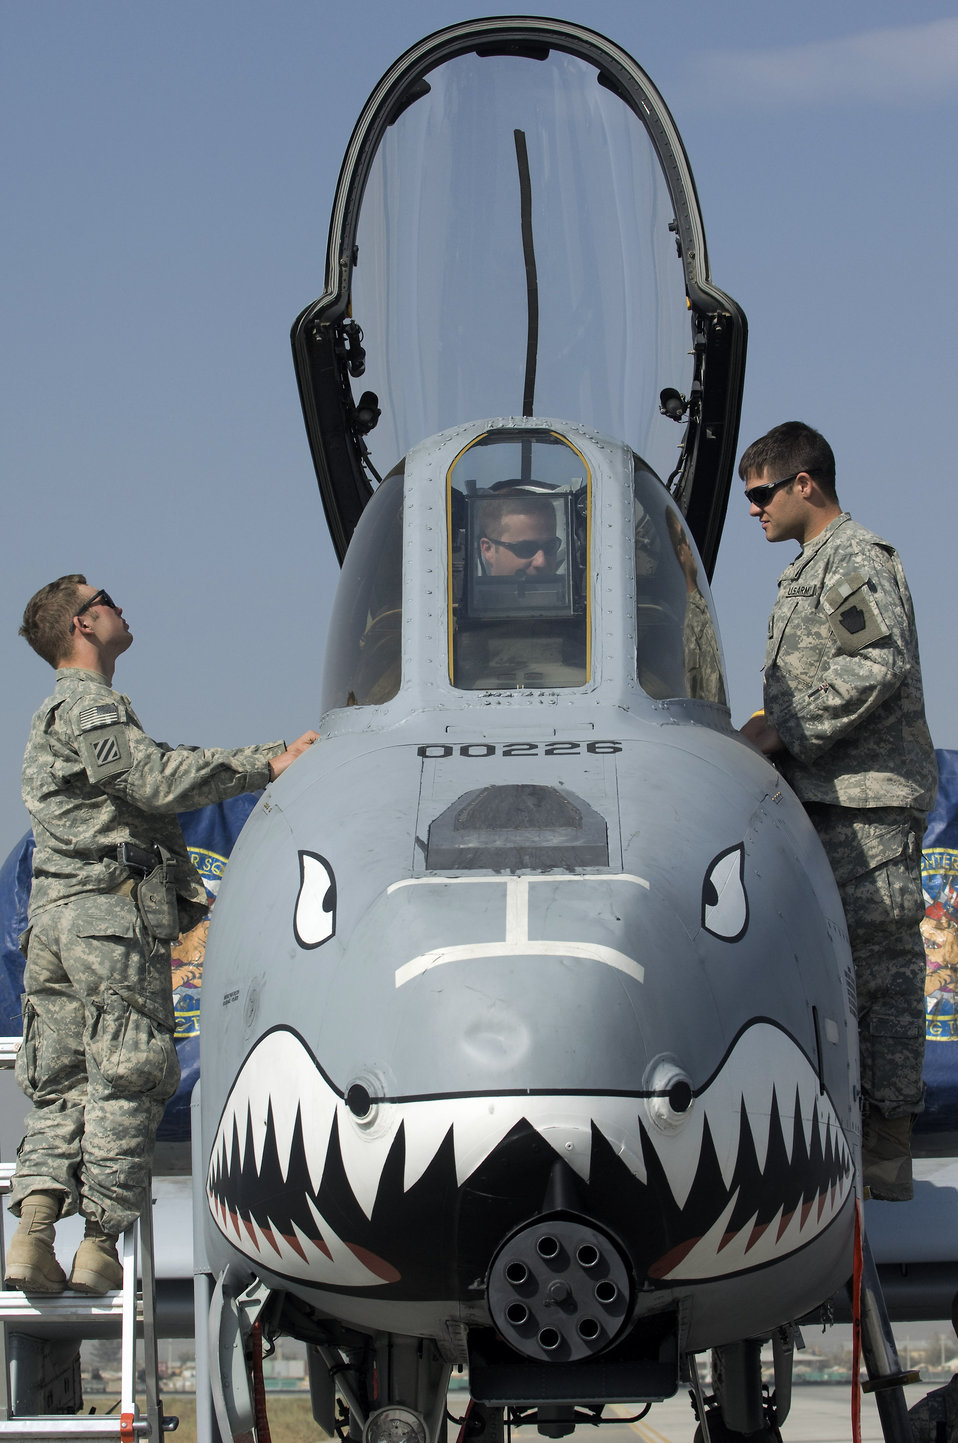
Air support unites Airmen, Soldiers in Afghanistan

Pennsylvania Army National Guard Soldiers Sgt. Mervin Hengst (left) and Staff Sgt. Donald Zerbe (right) learn about the A-10 Thunderbolt II from Capt. Robert Burdette during an Oct. 28 visit to Bagram Airfield, Afghanistan. Members from the 391st Expeditionary Fighter Squadron and the 75th Expeditionary Fighter Squadron hosted the Soldiers who wanted to thank the pilots who protect ground forces with close-air support while engaged in firefights with enemy forces.